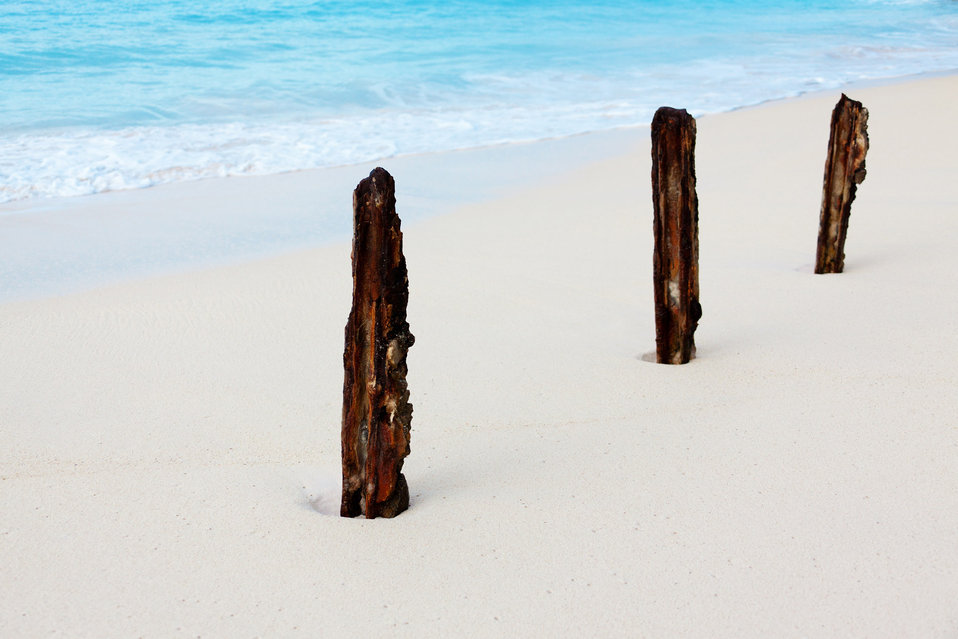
Three sticks on the beach

Three rusty sticks on the white beach.